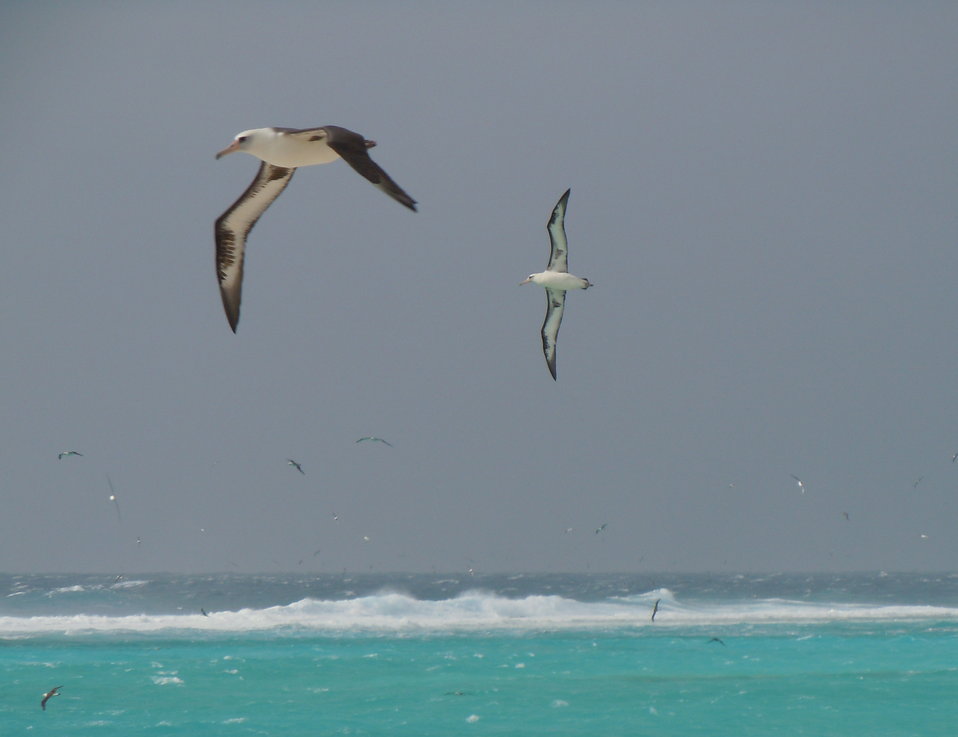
laysan albatross in flight, Sand Island

Midway Atoll National Wildlife Refuge
March 2012